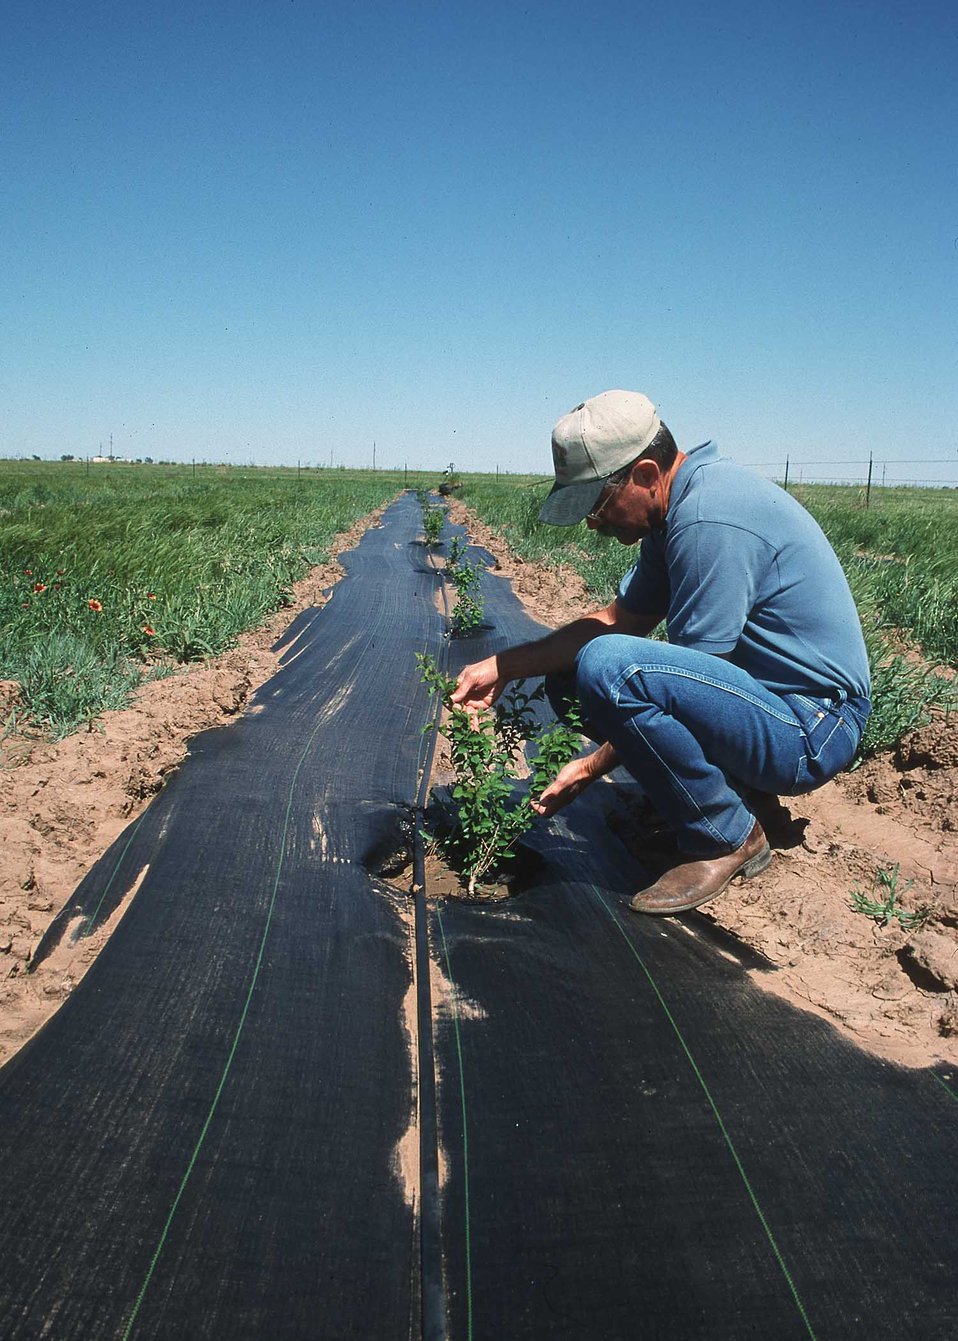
District Conservationist in Eastern New Mexico inspects tree planting. Ground was covered with plastic for weed control.